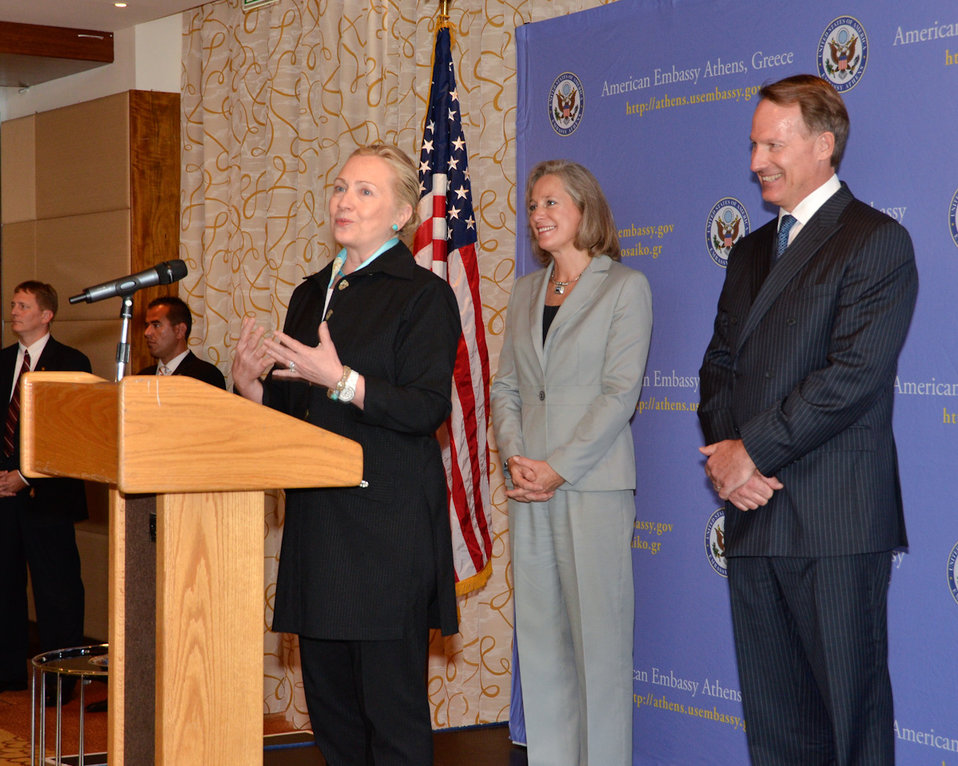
Secretary Clinton Speaks With Embassy Athens Staff and Families

U.S. Secretary of State Hillary Rodham Clinton speaks with Embassy Athens staff and families in Athens, Greece, on July 18, 2011. U.S. Ambassador to Greece Daniel B. Smith is pictured behind the Secretary.